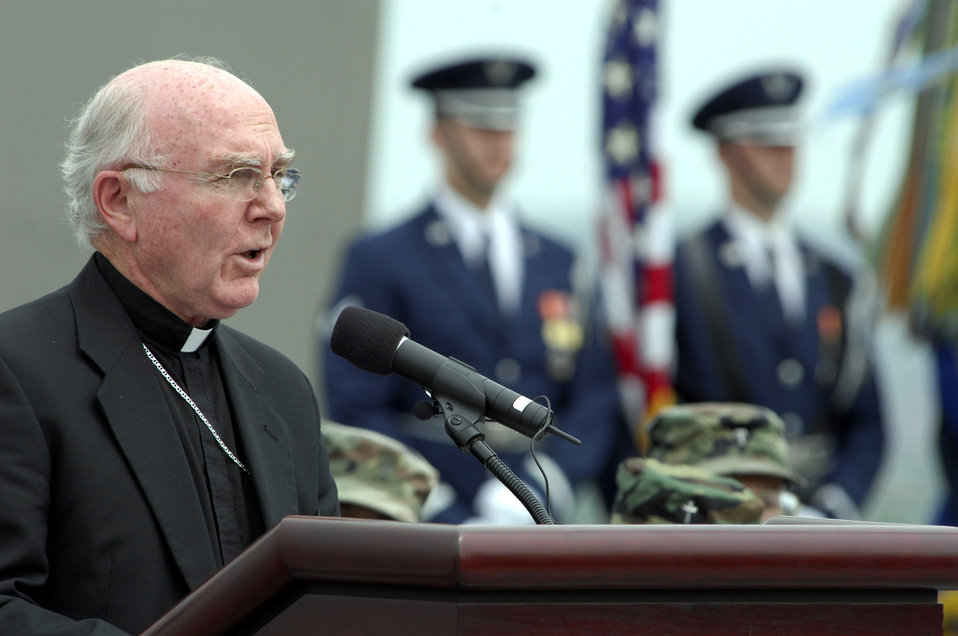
Air Force chaplains join together for memorial service

Retired Chaplain (Maj. Gen.) Bishop William Dendinger makes remarks during wreath ceremony at the Air Force Memorial in Arlington, Va., April 25 to honor chaplains and chaplain's assistants. General Dendinger served as an Air Force chaplain for more than 30 years and retired in 2001 as chief of the Air Force Chaplain Service.